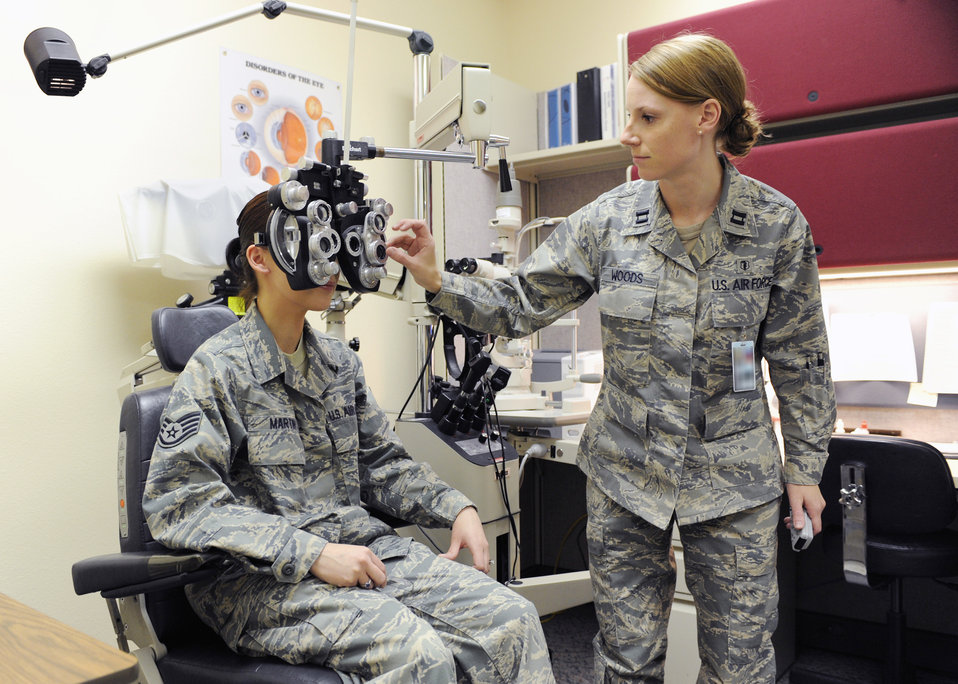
Can you see your future?

Capt. Caitlyn Woods uses a phoropter on Staff Sgt. Catherine Martin to check her vision and determine the correct prescription for her glasses March 11, 2010, at Minot Air Force Base, N.D. Captain Woods is a 5th Medical Operations Squadron chief of optometry services, and Sergeant Martin is a 5th Medical Group alternate personnel reliability program monitor.